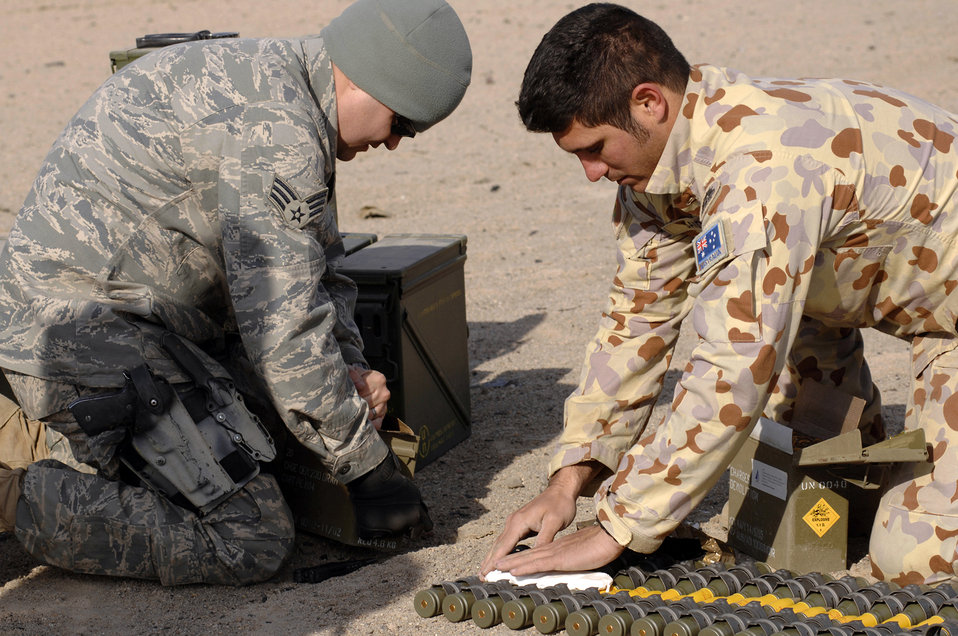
U.S. Air Force, Australian EOD have a blast

Senior Airman Charles Howell (left) and Australian Army Cpl. Nathan Sandow lay down P-4 explosive material over ammunition for a controlled detonation Jan. 18 in the Southwest Asia. Controlled detonations are done at an explosive ordnance disposal range to destroy unserviceable munitions. Airman Howell is with the 386th Expeditionary Civil Engineer Squadron Explosive Ordnance Disposal Flight and Corporal Sandow is with the Australian Army Force Level Logistic Asset unit.